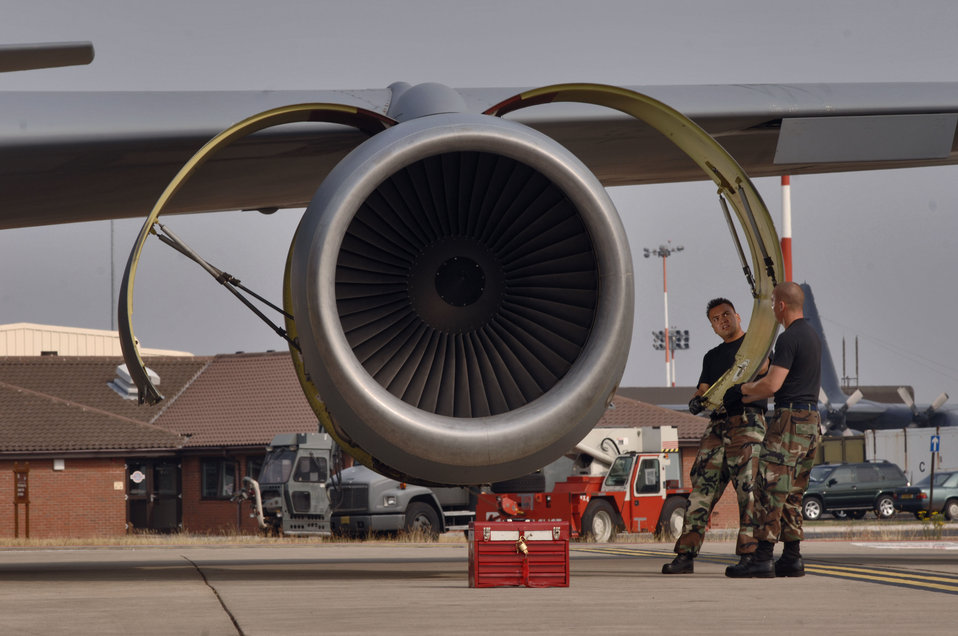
Creative troops, maintenance keep vintage tankers airborne

Airman 1st Class Brian Sloppy (right) and Senior Airman Jimmy Aguilar open the turbofan engine cowling of a KC-135 Stratotanker at Royal Air Force Mildenhall, England, on July 26. The Airmen are crew chiefs with the 100th Aircraft Maintenance Squadron. They work 12-hour shifts to keep their fleet of 15 tankers flying.